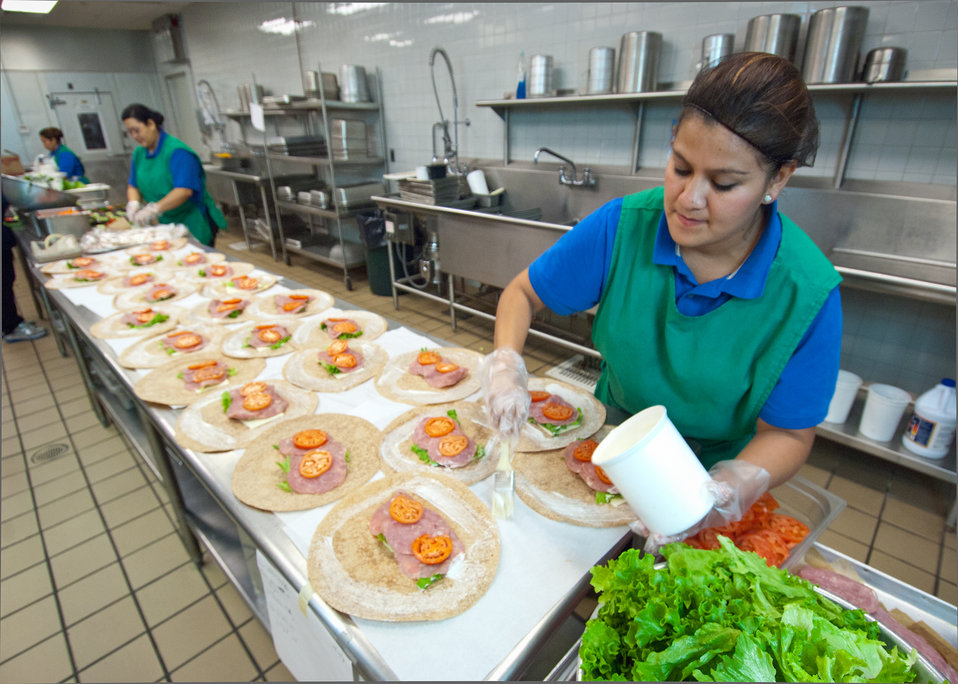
Candy Flores (right), prepares ham and cheese wraps and Rosalba Gomez, prepares fresh vegetable cups for the National School Lunch Program in the kitchen at Washington-Lee High School in Arlington, Virginia, on Wednesday, October 19, 2011. The National School Lunch Program is a federally assisted meal program administered by the United States Department of Agriculture, Food and Nutrition Service operating in public, nonprofit private schools and residential child care institutions. It provides nutritionally balanced, low-cost or free lunches to children each school day.